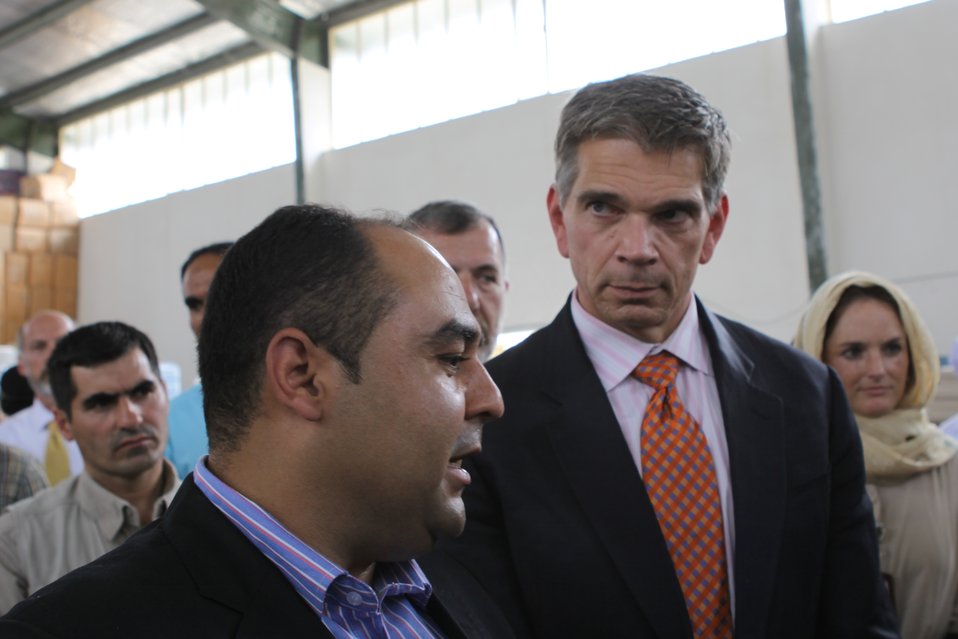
100525 Hirat Marble Conference 806